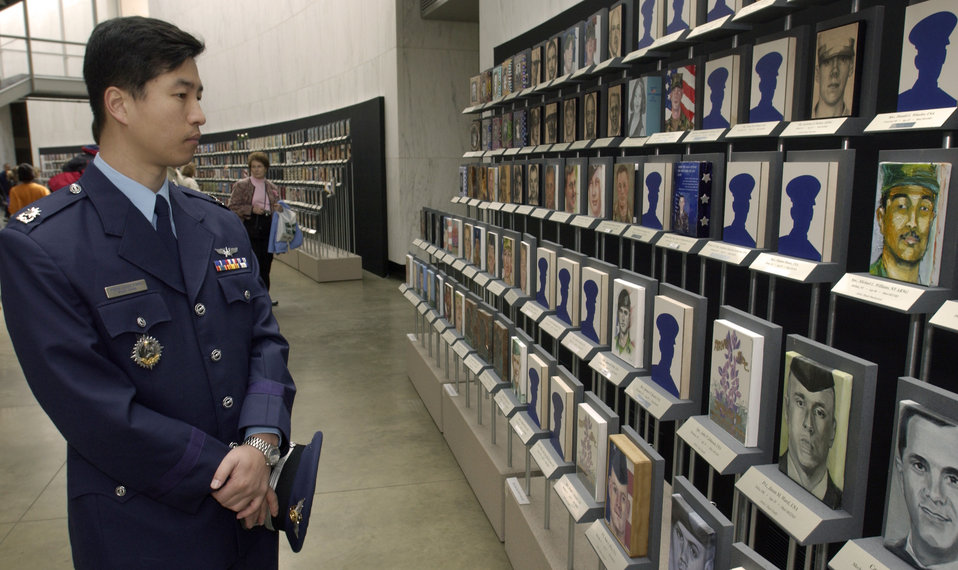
'Faces of Fallen' exhibit open at Arlington

ARLINGTON NATIONAL CEMETERY, Va. (AFPN) - Family members and other spectators take in the